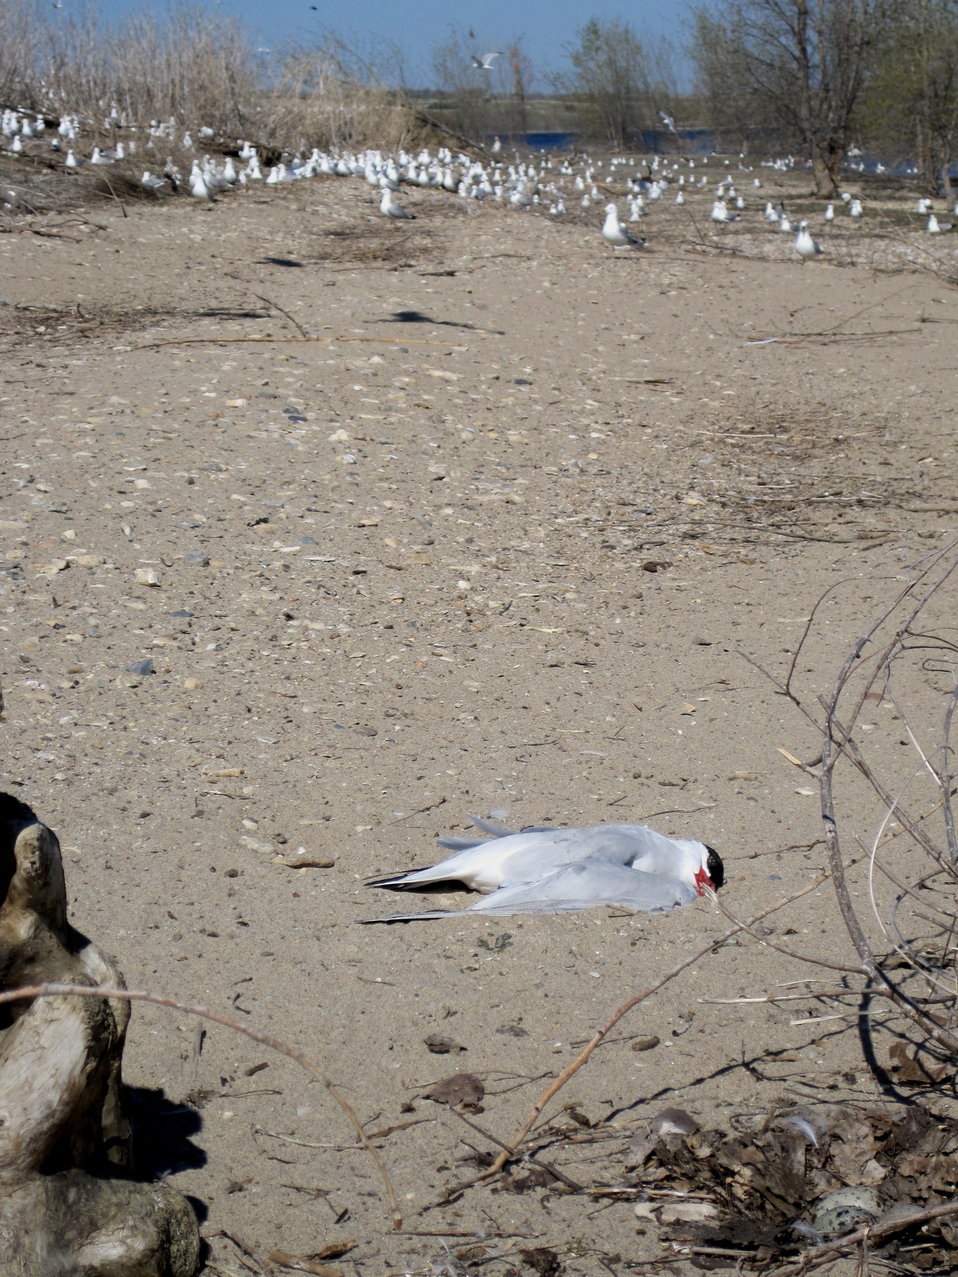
Avian Mortality

Dead tern on a waterbird nesting island in North Dakota. During mortality events, the U.S. Fish and Wildlife Service provides guidance and on-site assistance as necessary to investigate causes of mortality and identify ways to reduce mortality through management.